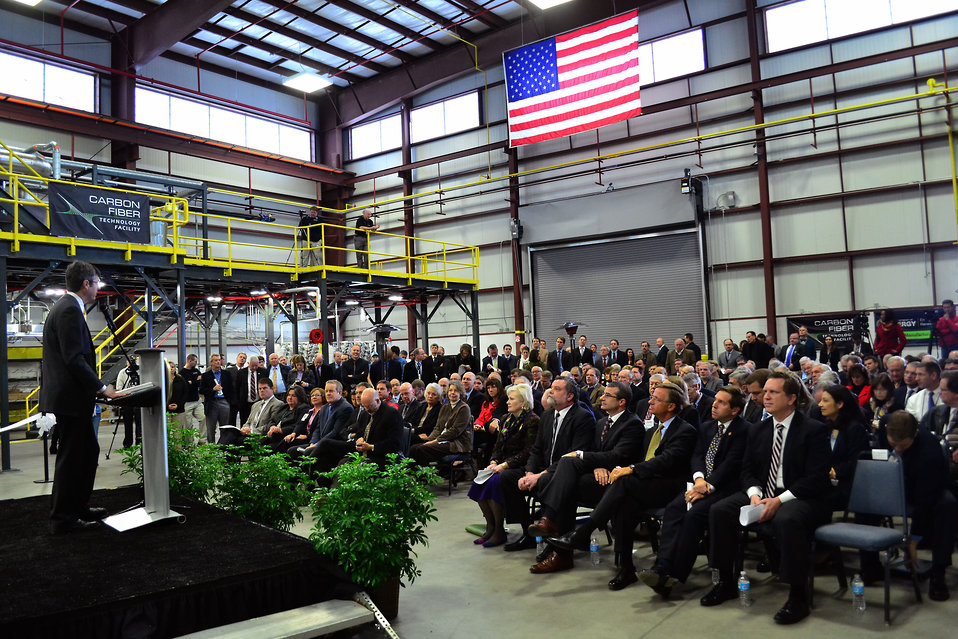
Carbon Fiber Technology Facilty Open House Oak Ridge Tennessee

13-025 DOE photo Lynn Freeny